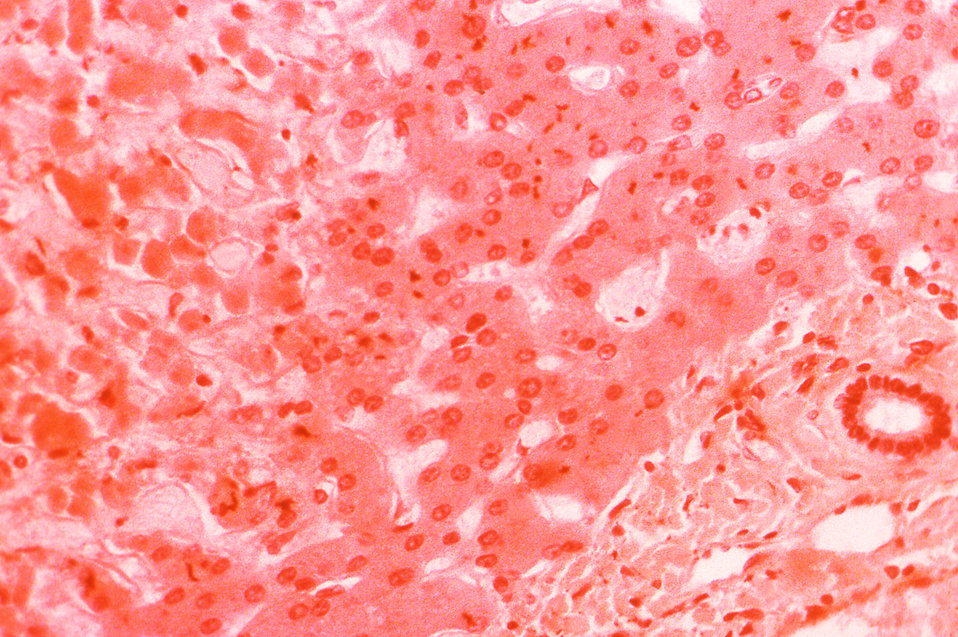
Under a moderate magnification of 200X, this hematoxylin-eosin-stained (H&E) photomicrograph depicts the cytoarchitectural changes found in a liver tissue specimen extracted from an 'atypical' viral hepatitis patient. In this particular view, note that there is a region of acidophilic necrosis that abuts some incomplete Councilman bodies. When viral hepatitis is categorized as being of the atypical type, it usually means that there is an accompanying infection such as yellow fever, or malaria. Though in this particular case, any concomitant infection was unidentified.